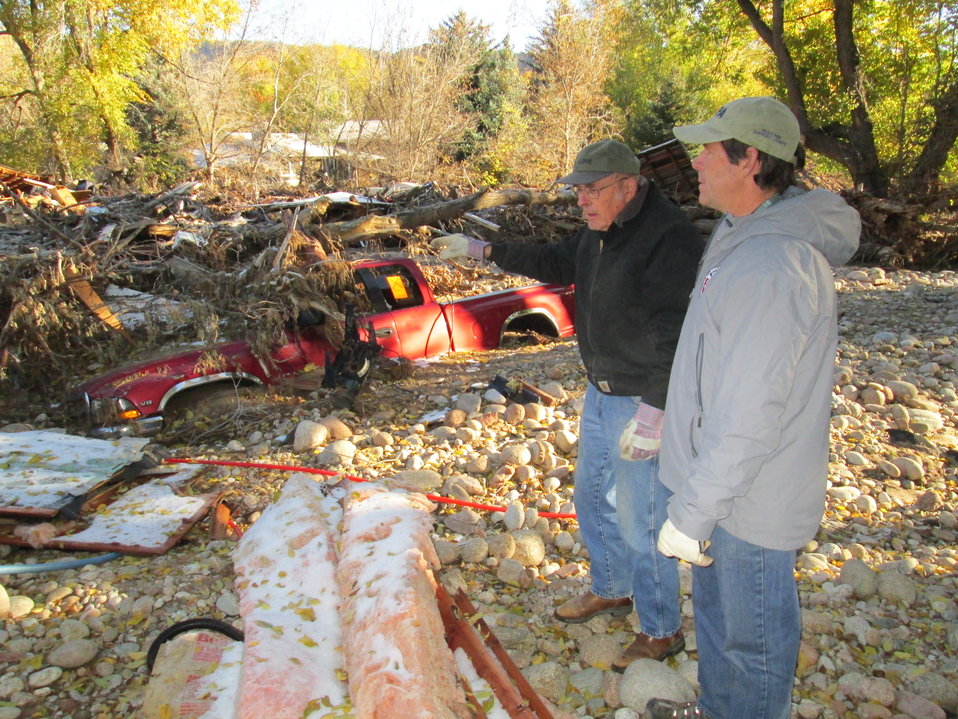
near Lyons, CO, October 31, 2013

EPA met with local land owners along the St. Vrain River near Lyons to strategize how to bring in heavy equipment to extract nearly 25 vehicles in the area. Here, on-scene coordinator Curtis Kimbel speaks with Lyons resident Dale Williamson, who lost several vehicles in the floods.